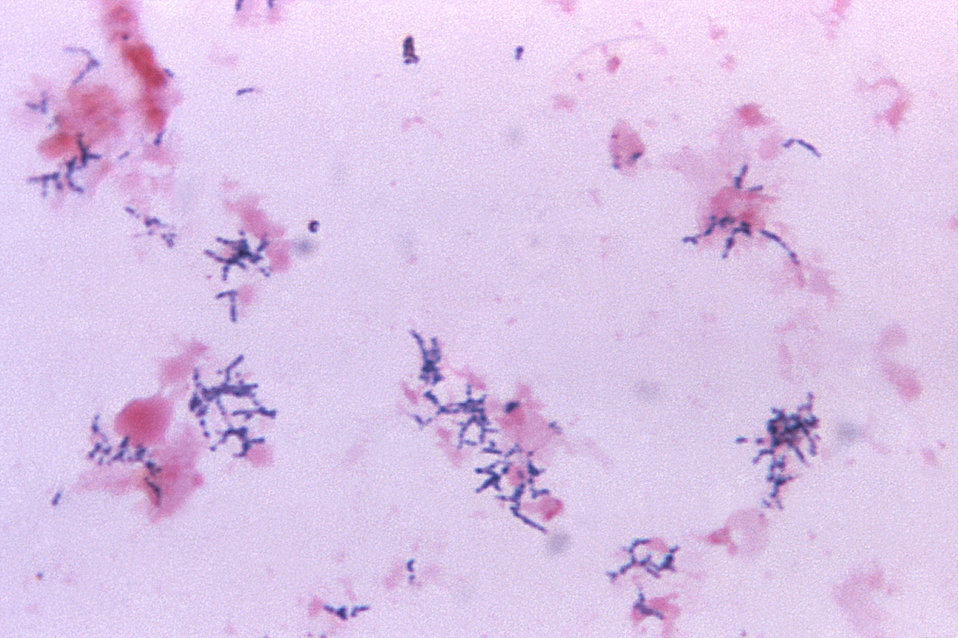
Magnified 1125X, this Gram-stained photomicrograph revealed some of the ultrastructural details associated with a specimen of thawed pus extracted from the jaw bone of a Dall sheep, Ovis dalli with a suspected case of actinomycosis. Note that the specimen revealed the presence of branched Gram-positive organisms. See PHIL 10804 for a gross pathologic view of the mandible from which this specimen was derived.